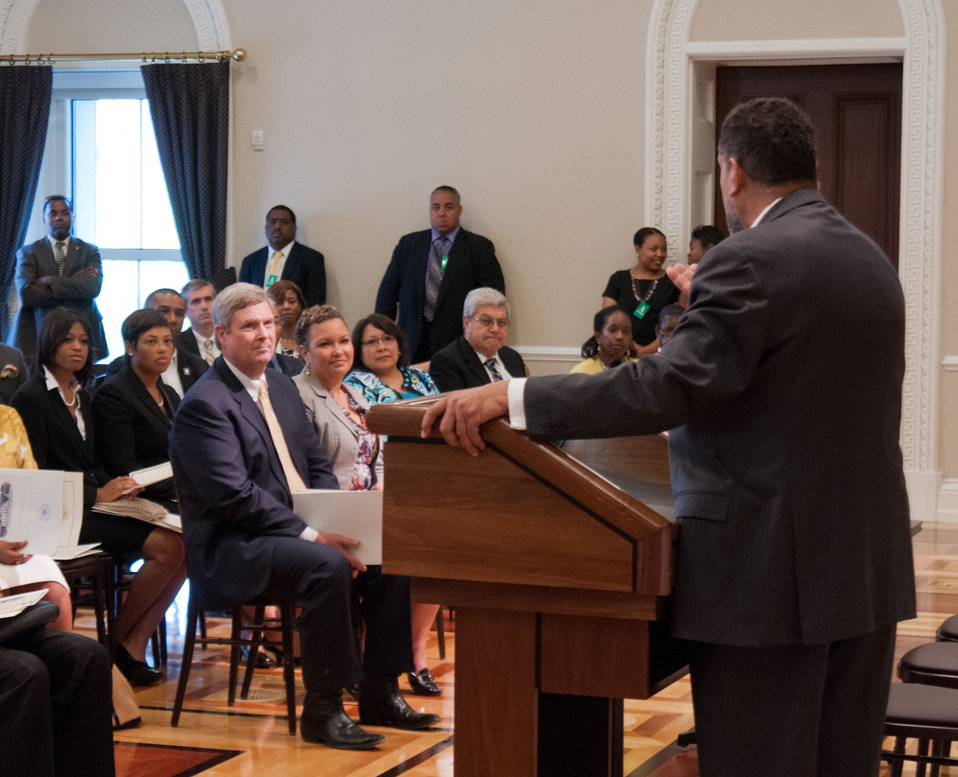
Agriculture Secretary Tom Vilsack, center, listens as Tuskegee University President and Council of 1890 Universities Chair Gilbert Rochon, speaks during the 2012 Historically Black Colleges and Universities 1890 Land-Grant University Memorandum of Understanding Signing Ceremony on Friday, June 29, 2012, in the White House’s Eisenhower Executive Office Building, Washington, DC. It has been150 years since the first Morrill Act of 1862, which was signed by President Abraham Lincoln. The action established land-grant universities in every state and territory. The second Morrill Act of 1890 provided funding to designate separate institutions of higher learning for blacks in those states that did not open the doors of their universities to black students.